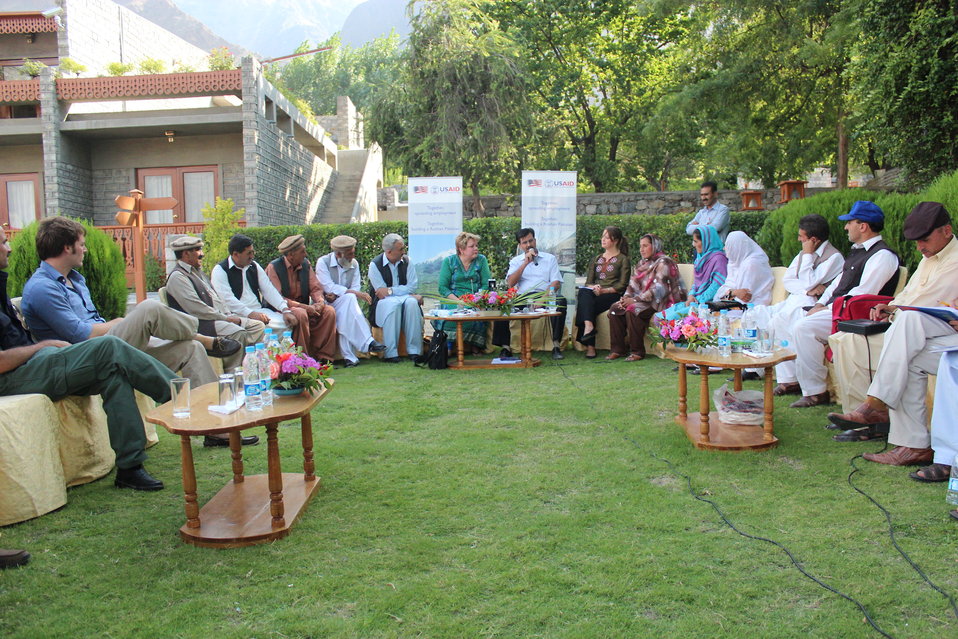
USAID Deputy Country Director Karen Freeman met with 6-8 beneficiaries from Gupis Rural Support Program

On Sunday, USAID Deputy Country Director Karen Freeman met with 6-8 beneficiaries from Gupis Rural Support Program to learn about their project funded by a USAID grant. The meeting took place at Serena Hotel in Gilgit.